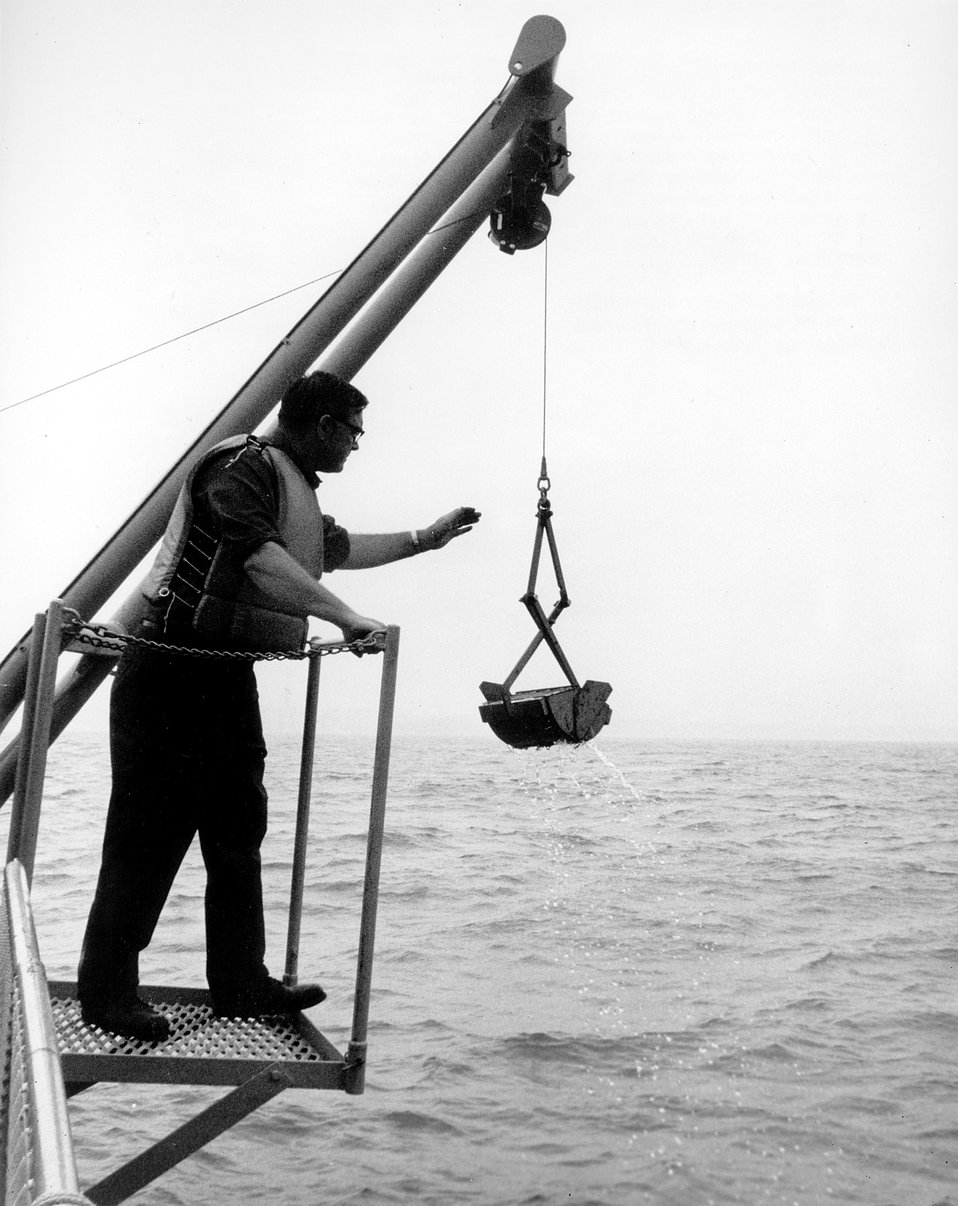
Samples of sediments from the bottom of Lake Michigan is brought aboard a U of Wisconsin research vessel.
c.1972